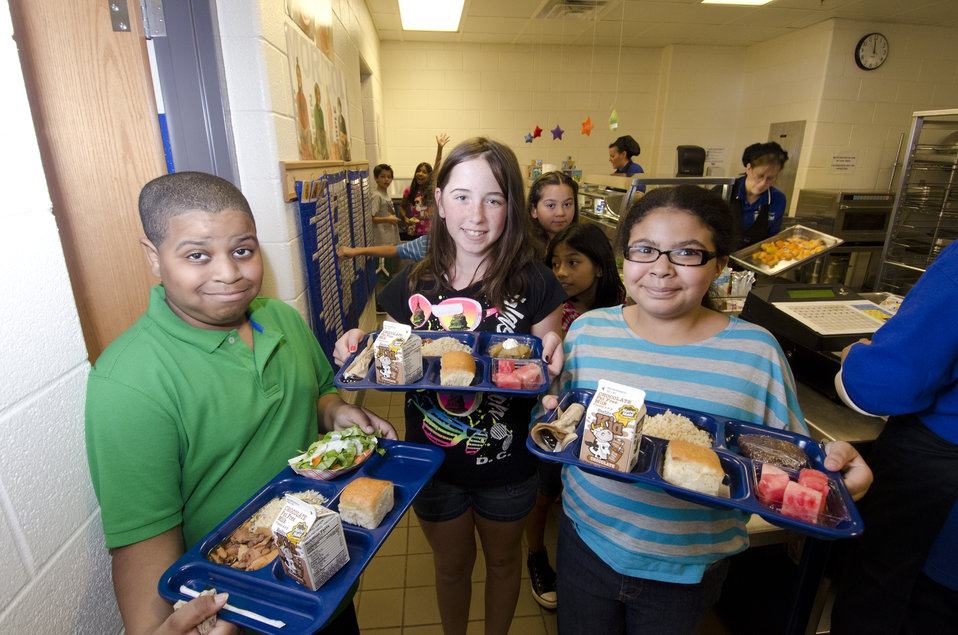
School lunch staff and students enjoy the new school lunch menu created to meet the new standards at the Yorkshire Elementary School in Manassas, VA on Friday, Sept. 7, 2012.